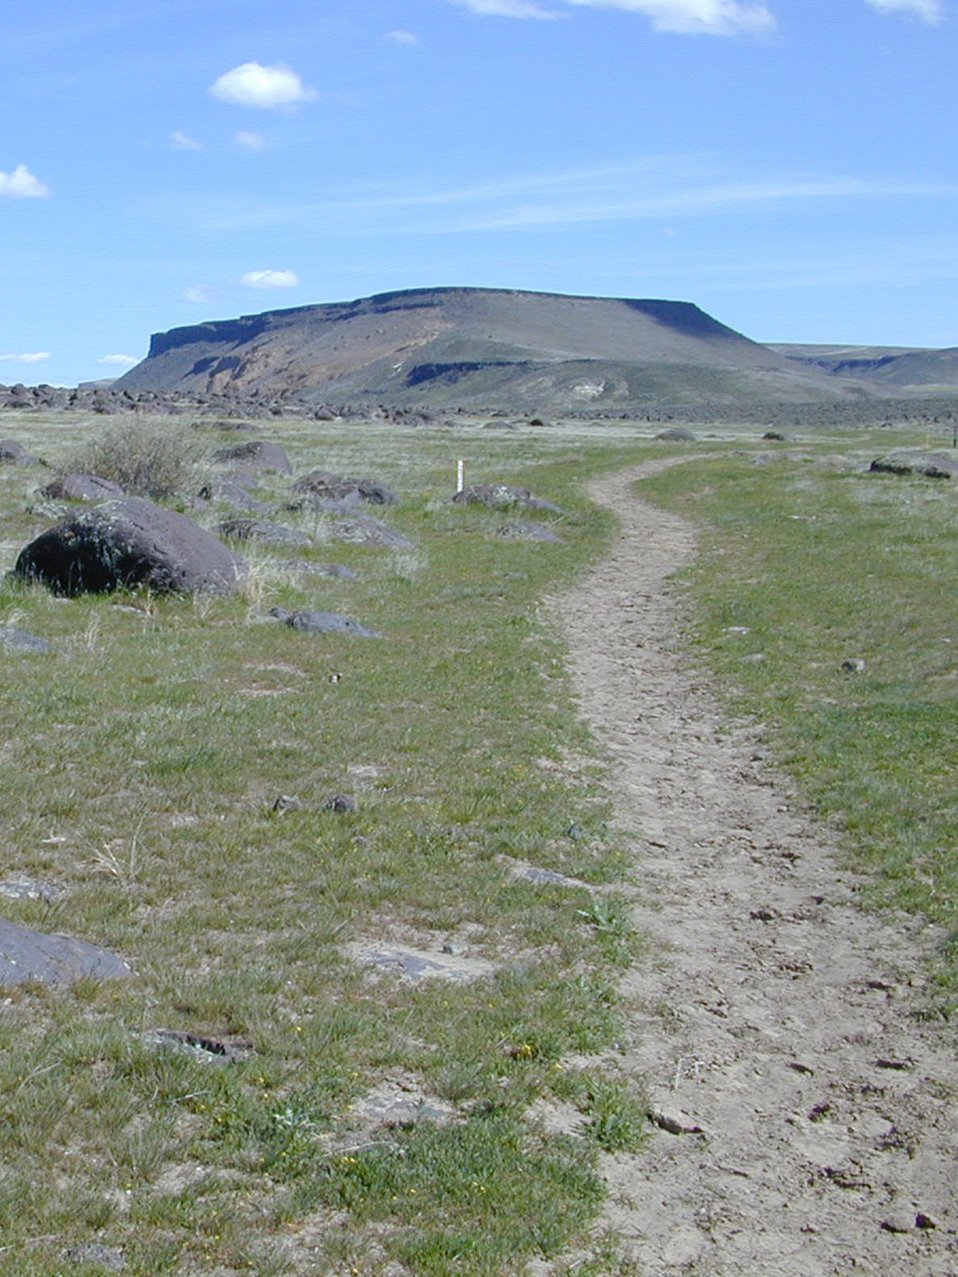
Trail through the Snake River Birds of Prey National Conservation Area Lower Snake River District LSRD Snake River Canyon